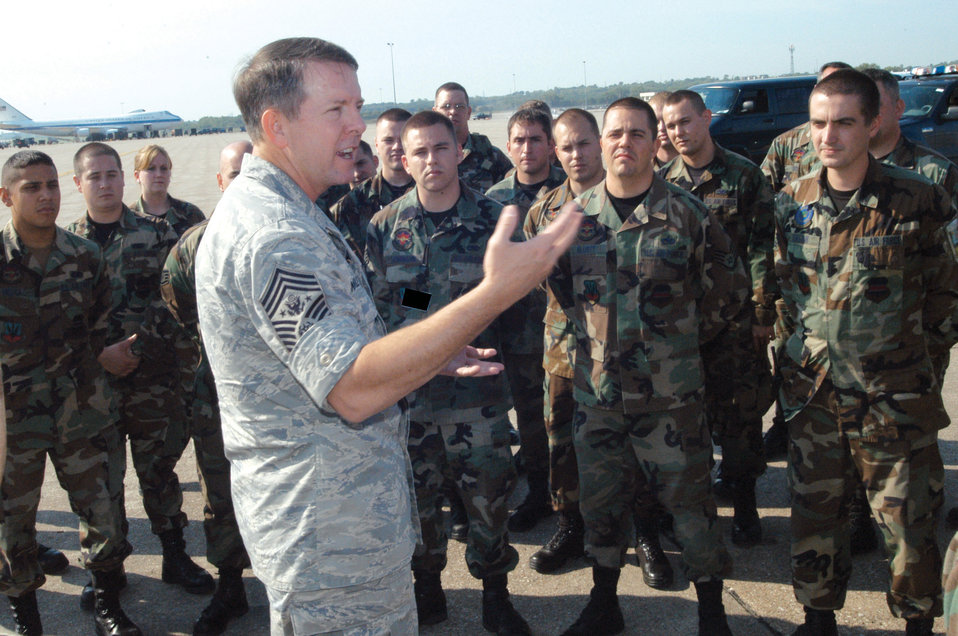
CMSAF McKinley gets firsthand look at Offutt missions

Chief Master Sgt. of the Air Force Rodney J. McKinley speaks to Offutt Airmen on the flightline at Lincoln Airpark, Neb., Sept. 8. The airpark is the 55th Wing's